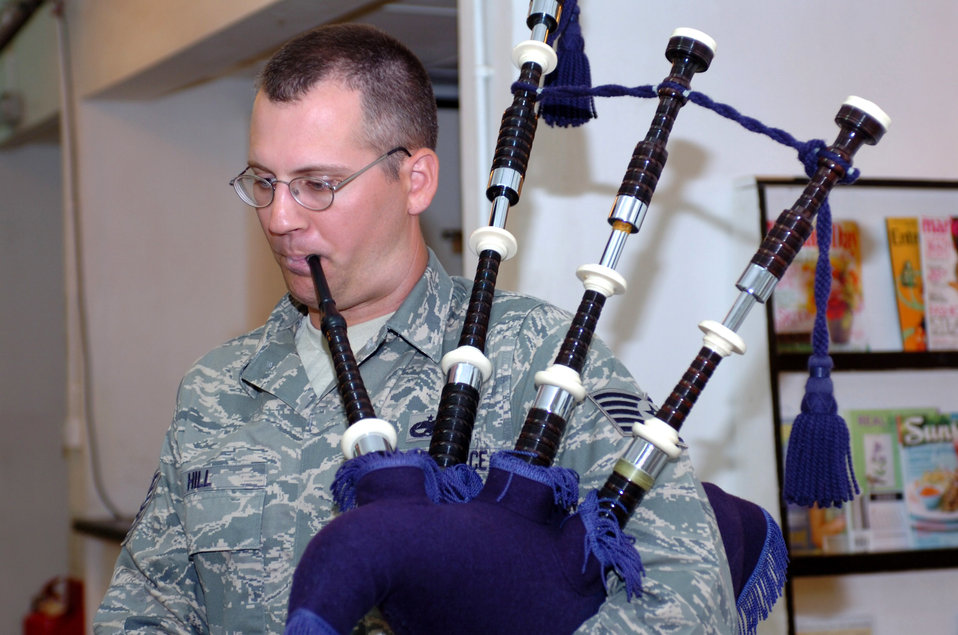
In celebration of the 60th anniversary

Tech. Sgt. Benny Hill plays